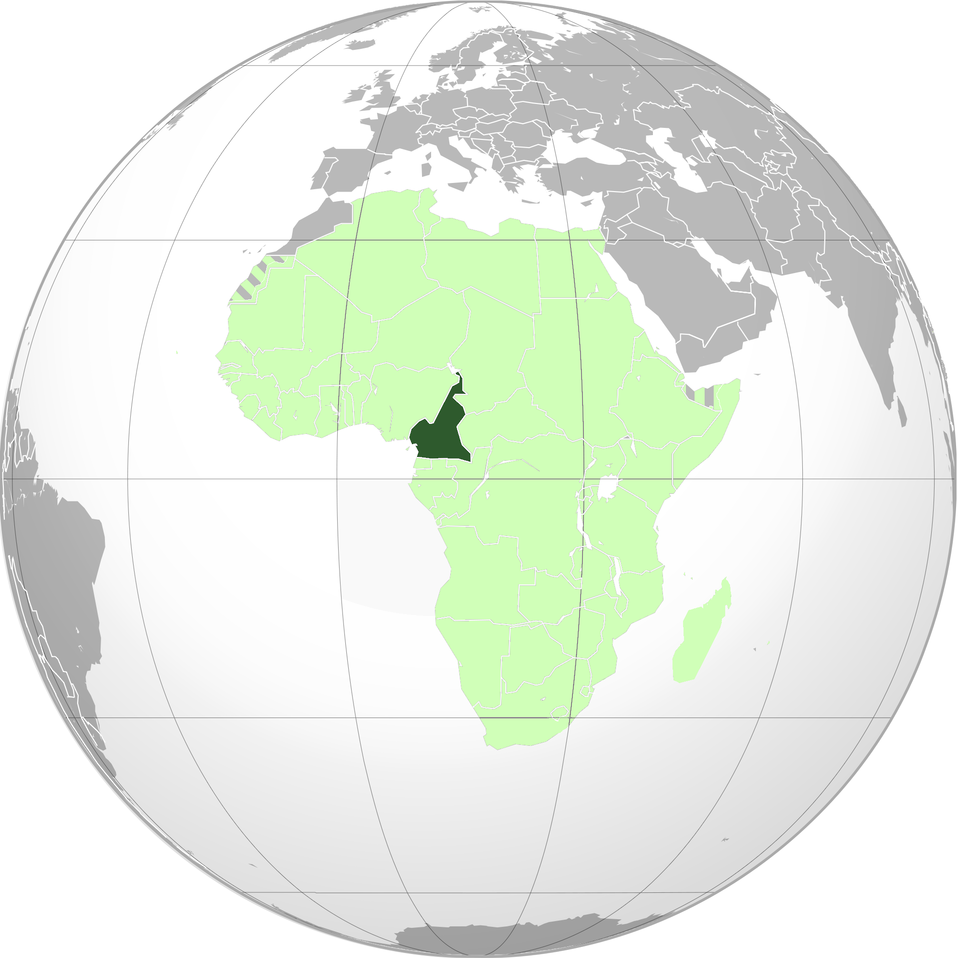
Green: Cameroon
Light green: African Union